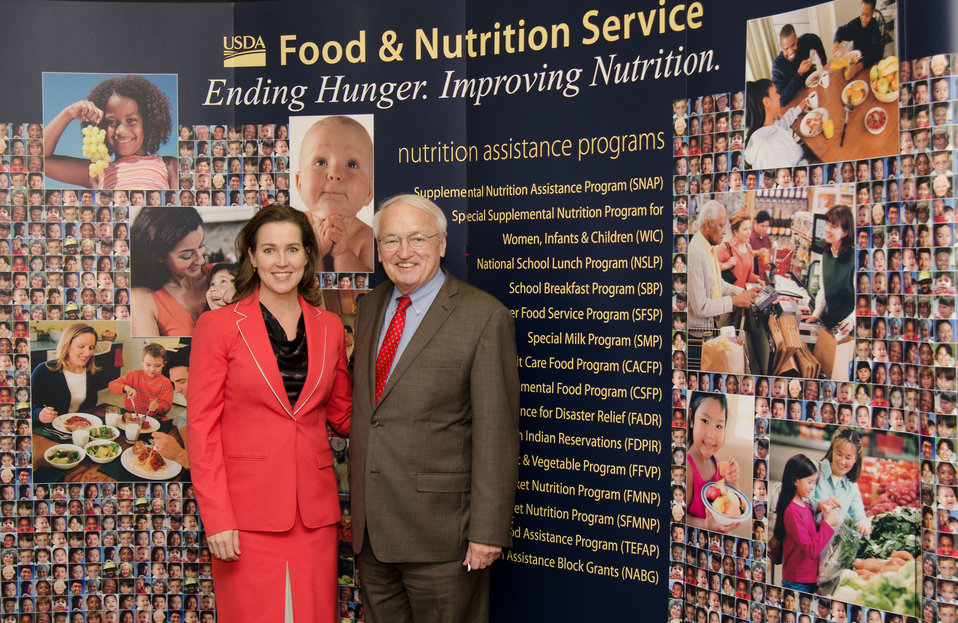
First Lady of Oregon Cylvia Hayes (left) met with Agriculture Under Secretary for Food, Nutrition and Consumer Services (FNCS) Kevin Concannon (right) in his offices at the Agriculture headquarters in Washington, D.C., on Monday, February 27, 2012. They discussed school lunch options and nutrition assistance programs within the Food and Nutrition Service (FNS) who's motto is 'Ending Hunger, Improving Nutrition.'